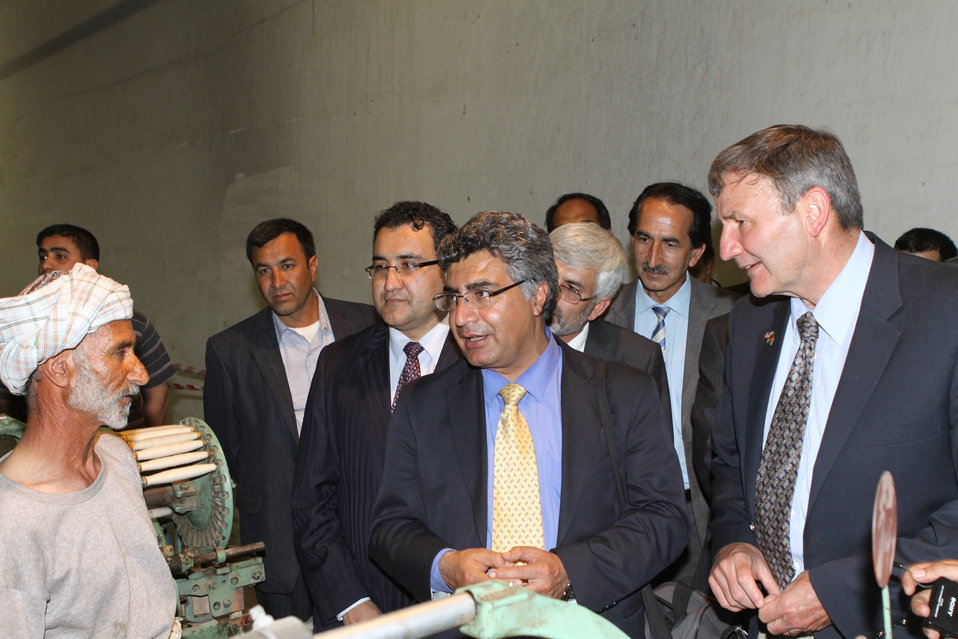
100525 Hirat Textile Company 763